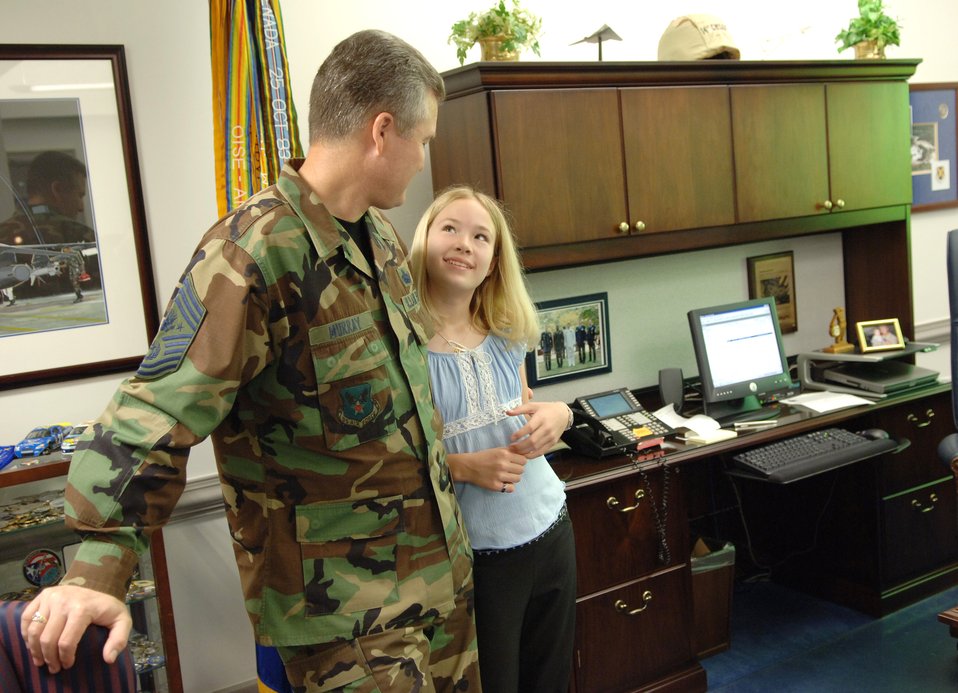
CMSAF Murray enjoys day at work with his children

Elizabeth Murray, 10, spends time with her dad, Chief Master Sgt. of the Air Force Gerald R. Murray, in his Pentagon office on Thursday, April 27, 2006. Chief Murray brought Elizabeth and his son Stephen to the Pentagon for the National Take Our Daughters and Sons to Work Day.